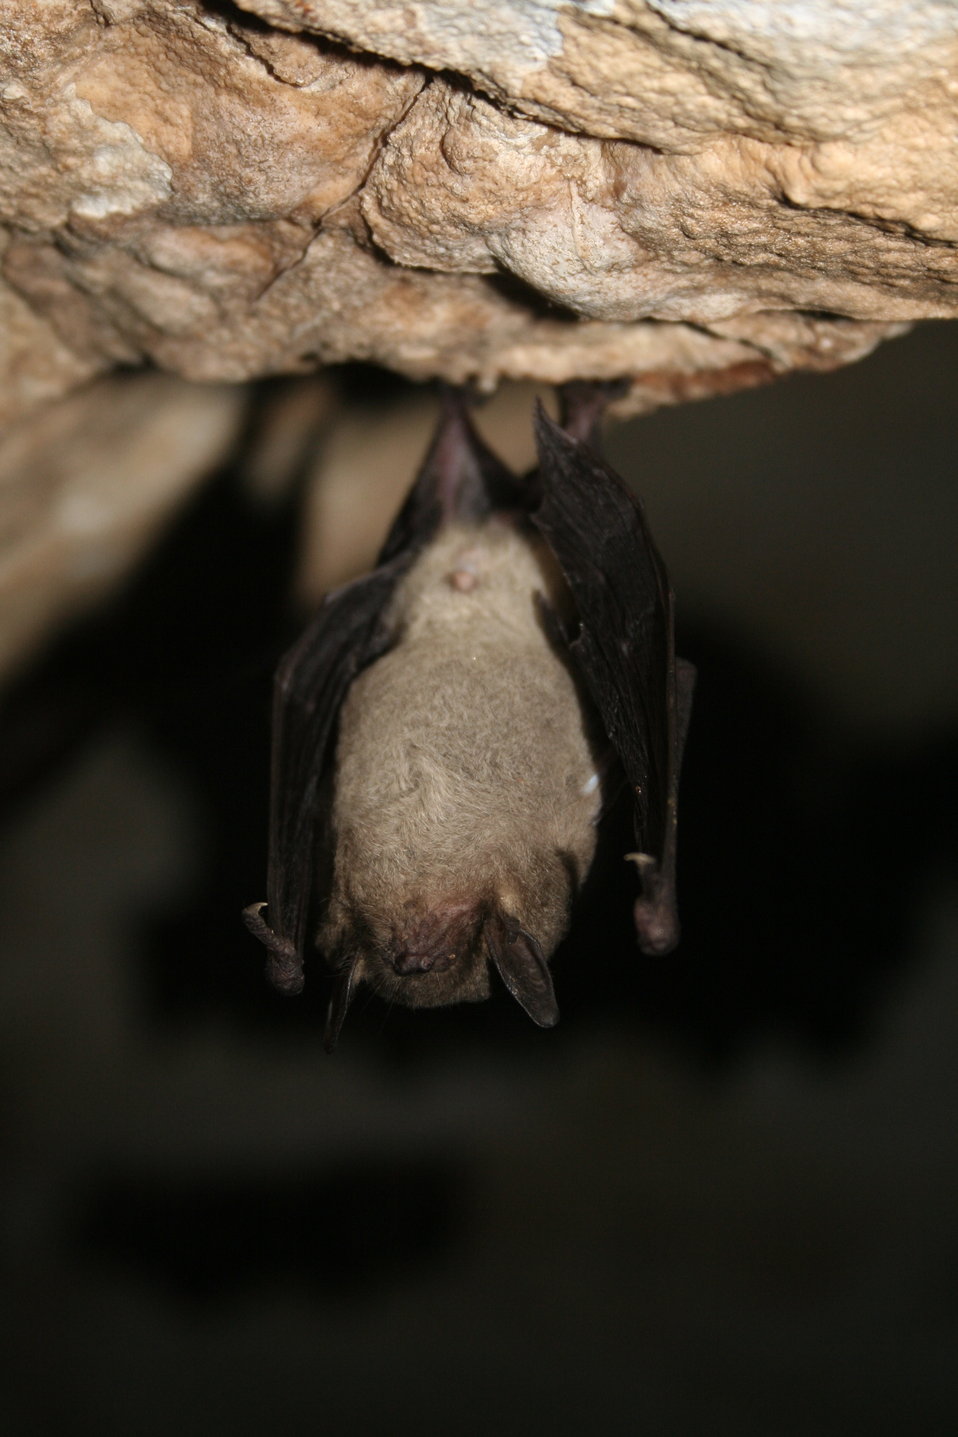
gray bat

Hibernating gray bat (Myotis grisescens)